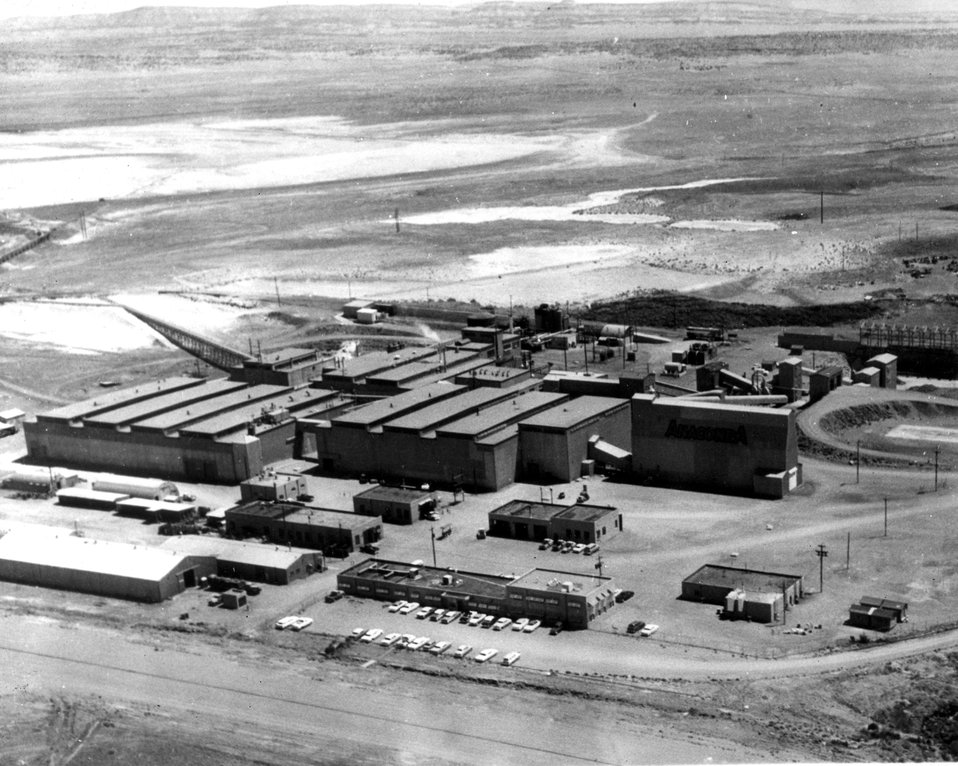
BLUEWATER MILL...One of the largest of the 24 uranium processing plants under contract to the AEC, the Anaconda Company Bluewater Mill is located ten miles northwest of Grants, New Mexico. c. 1963